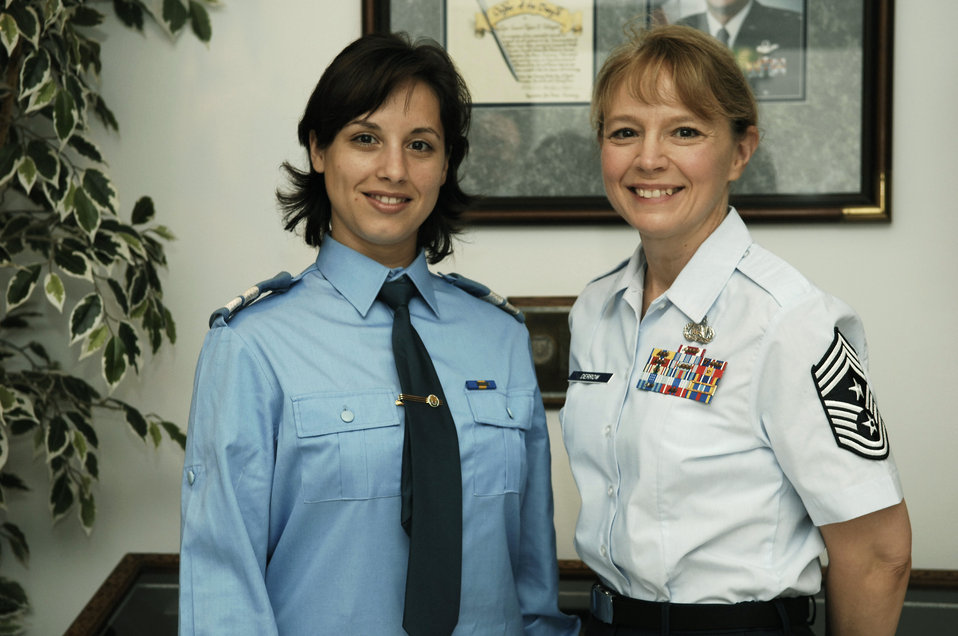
Kisling NCO Academy hosts first international student

Chief Master Sgt. Pamela Derrow welcomes Romanian air force Plutonier (Tech. Sgt. equivalent) Diana-Cristina Mireuta to the Kisling Noncommissioned Officer Academy at Kapaun Air Station, Germany, Sept. 21, 2009. Plutonier Mireuta is the first international air force student to attend the Kisling NCO Academy as part of the United States Air Forces in Europe International Military Education and Training initiative. Chief Derrow is the USAFE command chief.